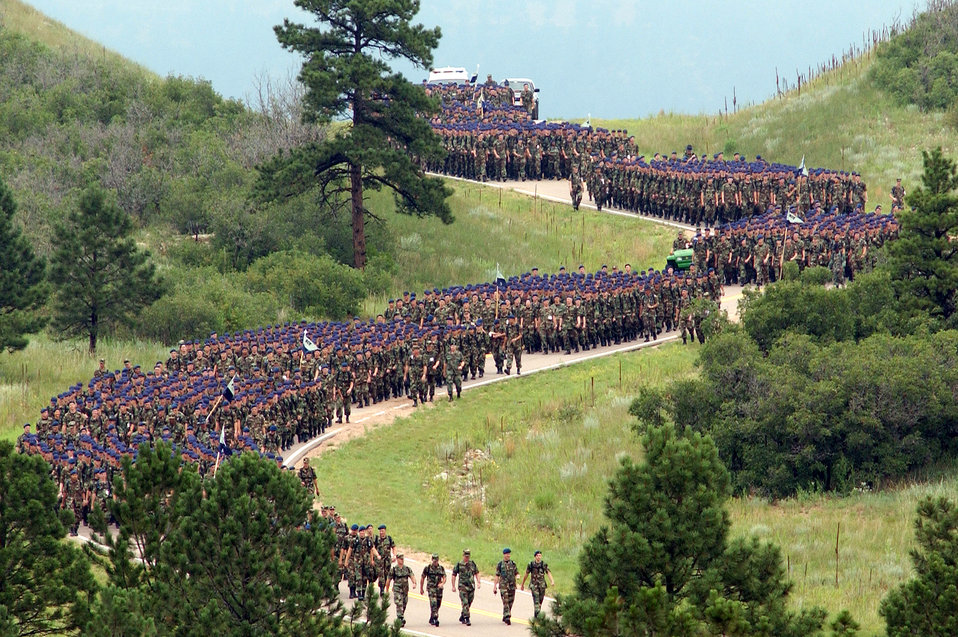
Trainees march out for field portion of basic cadet training

U.S. AIR FORCE ACADEMY, Colo. -- Nearly 1,300 people from the Class of 2008 completed a 7.8 mile march from the U.S. Air Force Academy to a tent city in Jacks Valley on July 23 to begin the field portion of basic cadet training.